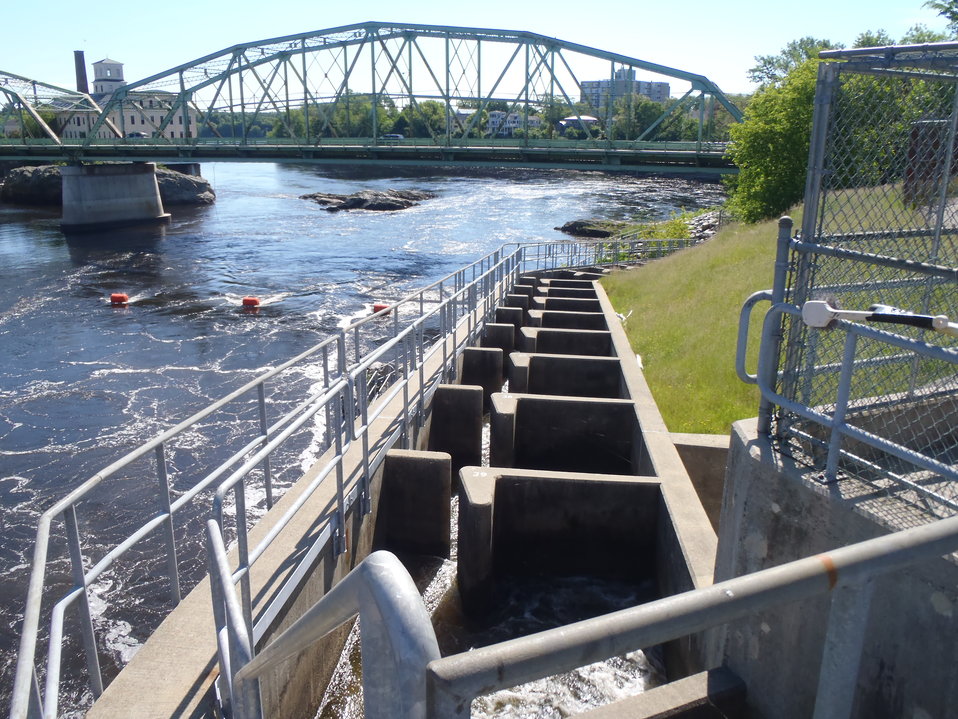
Vertical slot fishway